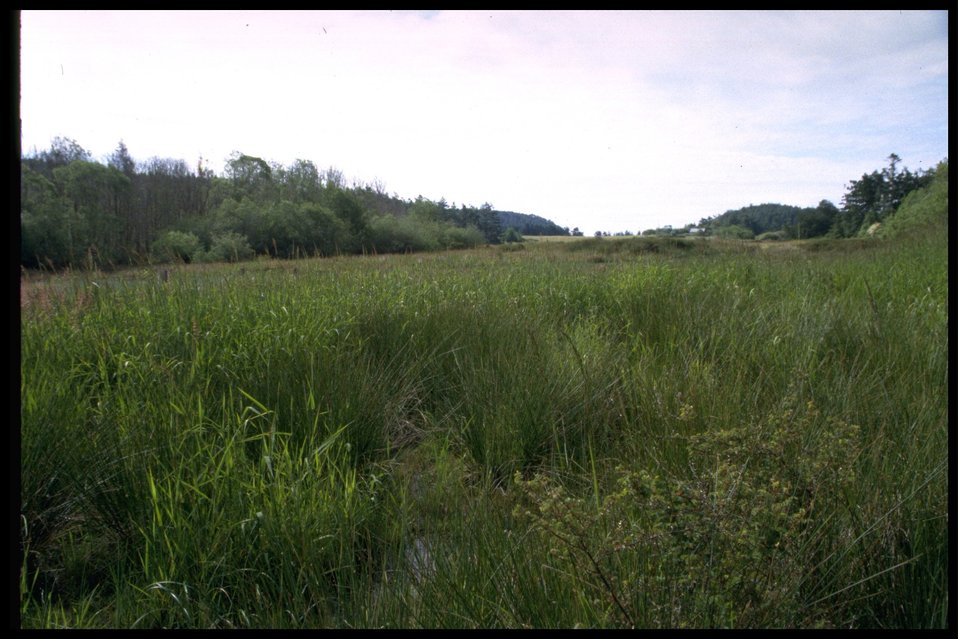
Chadwick Hill Marsh.